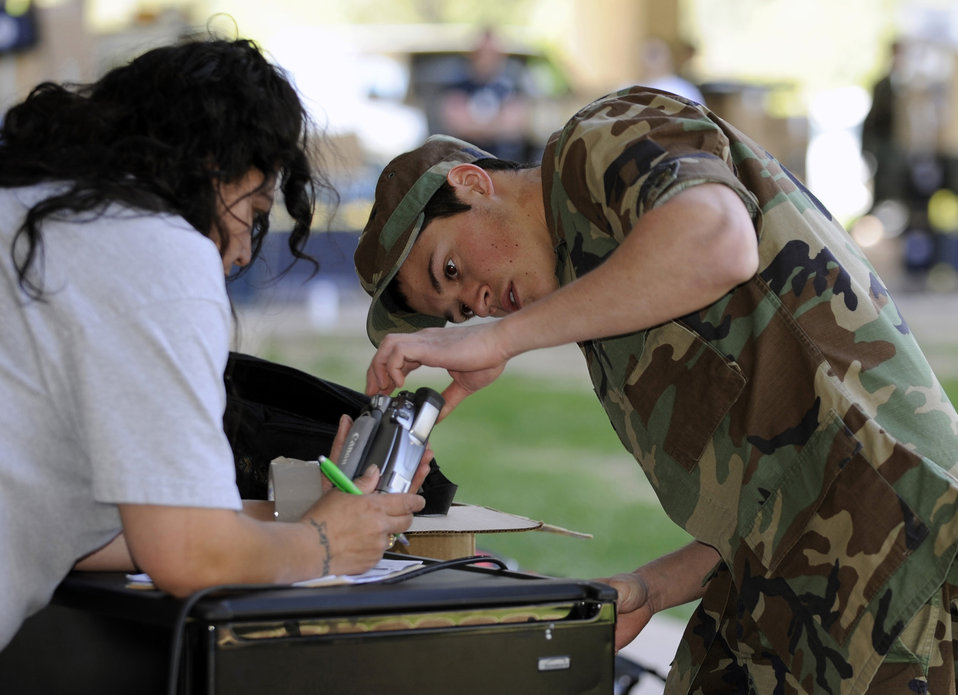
Move out!

At the Air Force Academy in Colorado, Senior Cadet Dean Chuva checks his information for shipment to his new assignment at Eglin Air Force Base, Fla.. With only six days until graduation, many preparations must be done before commissioning. Cadet Chuva is a member of the graduating class of 2009.